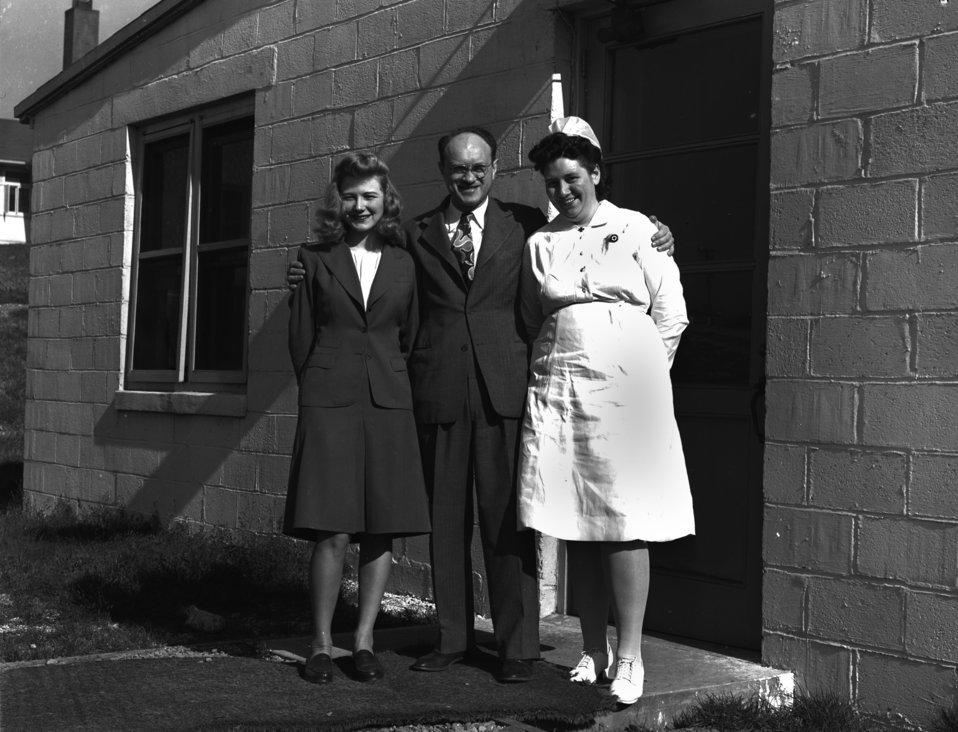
Oak Ridge Health Department

3245-9b DOE photo Ed Westcott 1-23-1947 Oak Ridge Tennessee